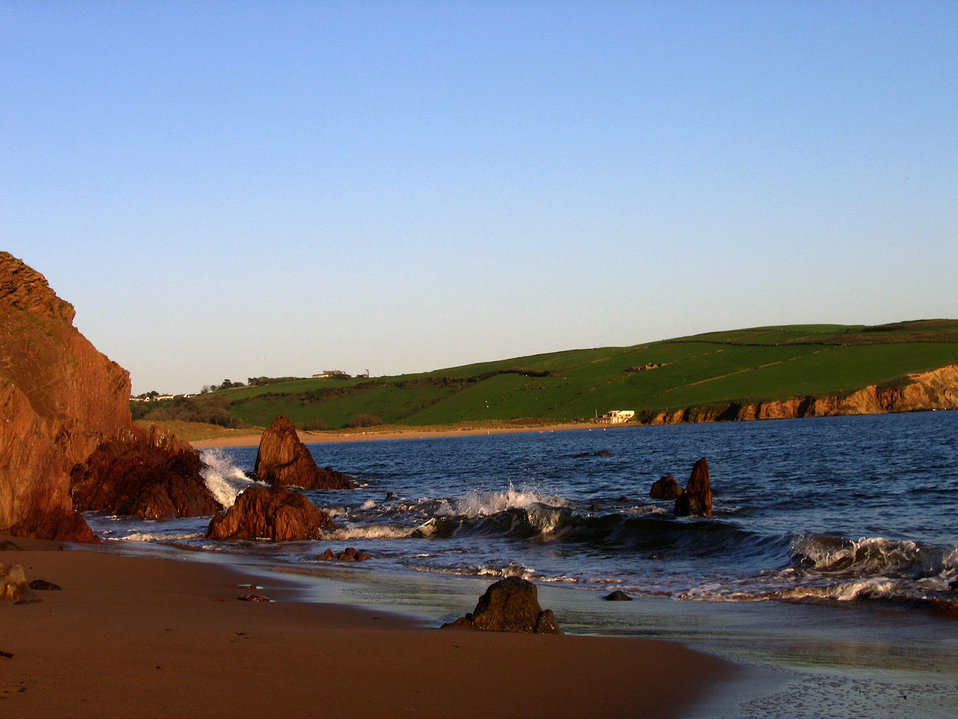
Bigbury on sea.